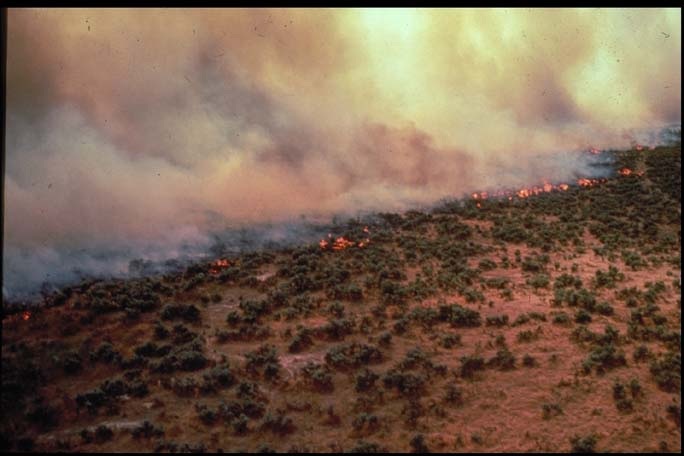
Wildland fire